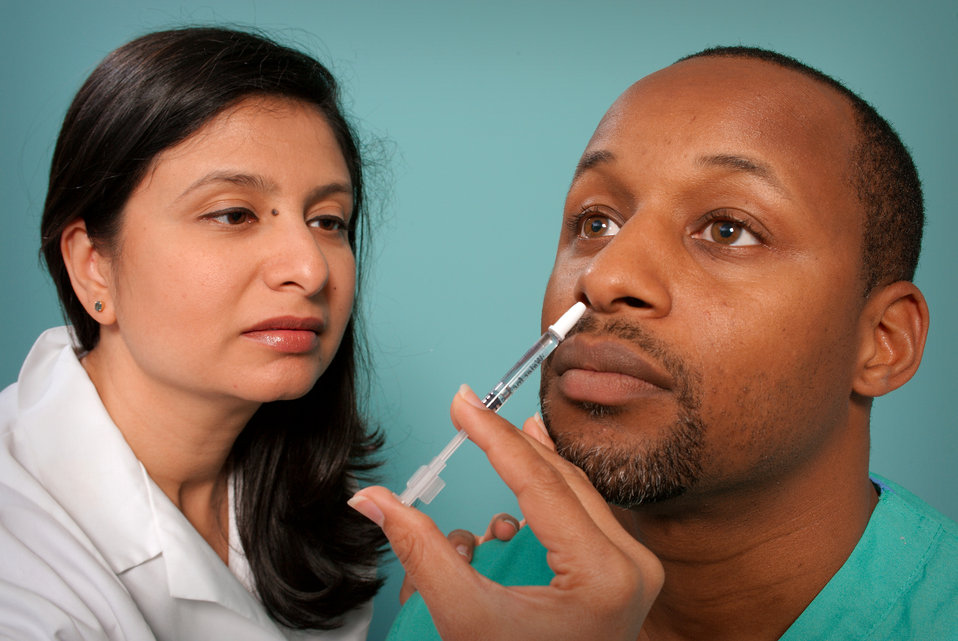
This 2009 image depicts a healthcare practitioner as she was administering the H1N1 live attenuated intranasal vaccine (LAIV) to an African-American man. Using a small syringe, she was delivering the vaccine mist into the man's right nostril.